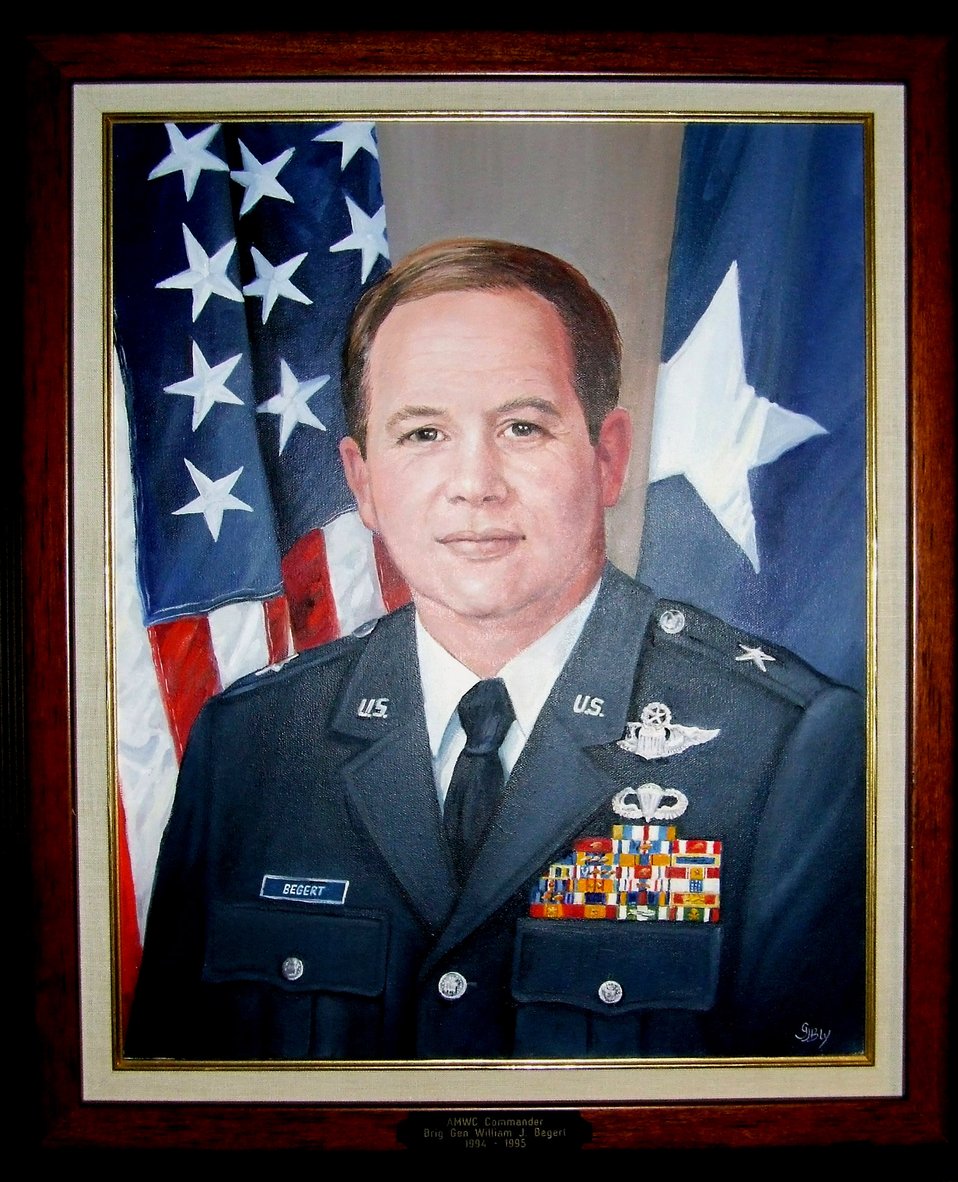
Expeditionary center's Air Force art collection inspires Airmen

This portrait of Brig. Gen. William J. Begert, the first commander of the Air Mobility Warfare Center, now known as the Air Force Expeditionary Center, hangs on the walls of the Center on Fort Dix, N.J. General Begert, along with his wife, Judy, were responsible for bringing a large collection of art from the Air Force Art Program to the center when he became commander in 1994. The center holds Air Mobility Command's second largest collection of Air Force art on display.